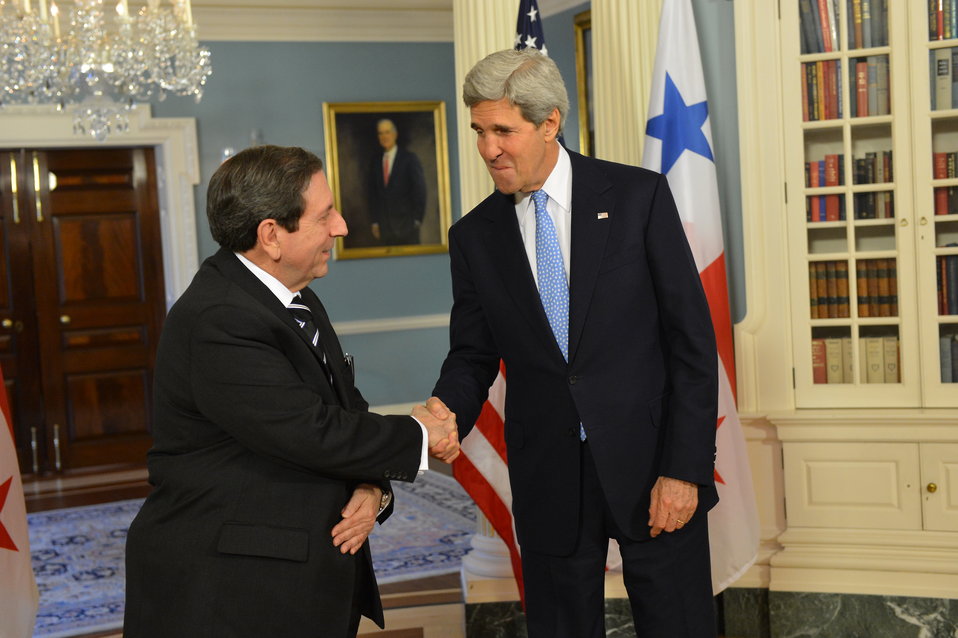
Secretary Kerry Meets With Panamanian Foreign Minister Fabrega

U.S. Secretary of State John Kerry meets with with Panamanian Foreign Minister Nunez Fabrega at the U.S. Department of State in Washington, D.C., on November 13, 2013.